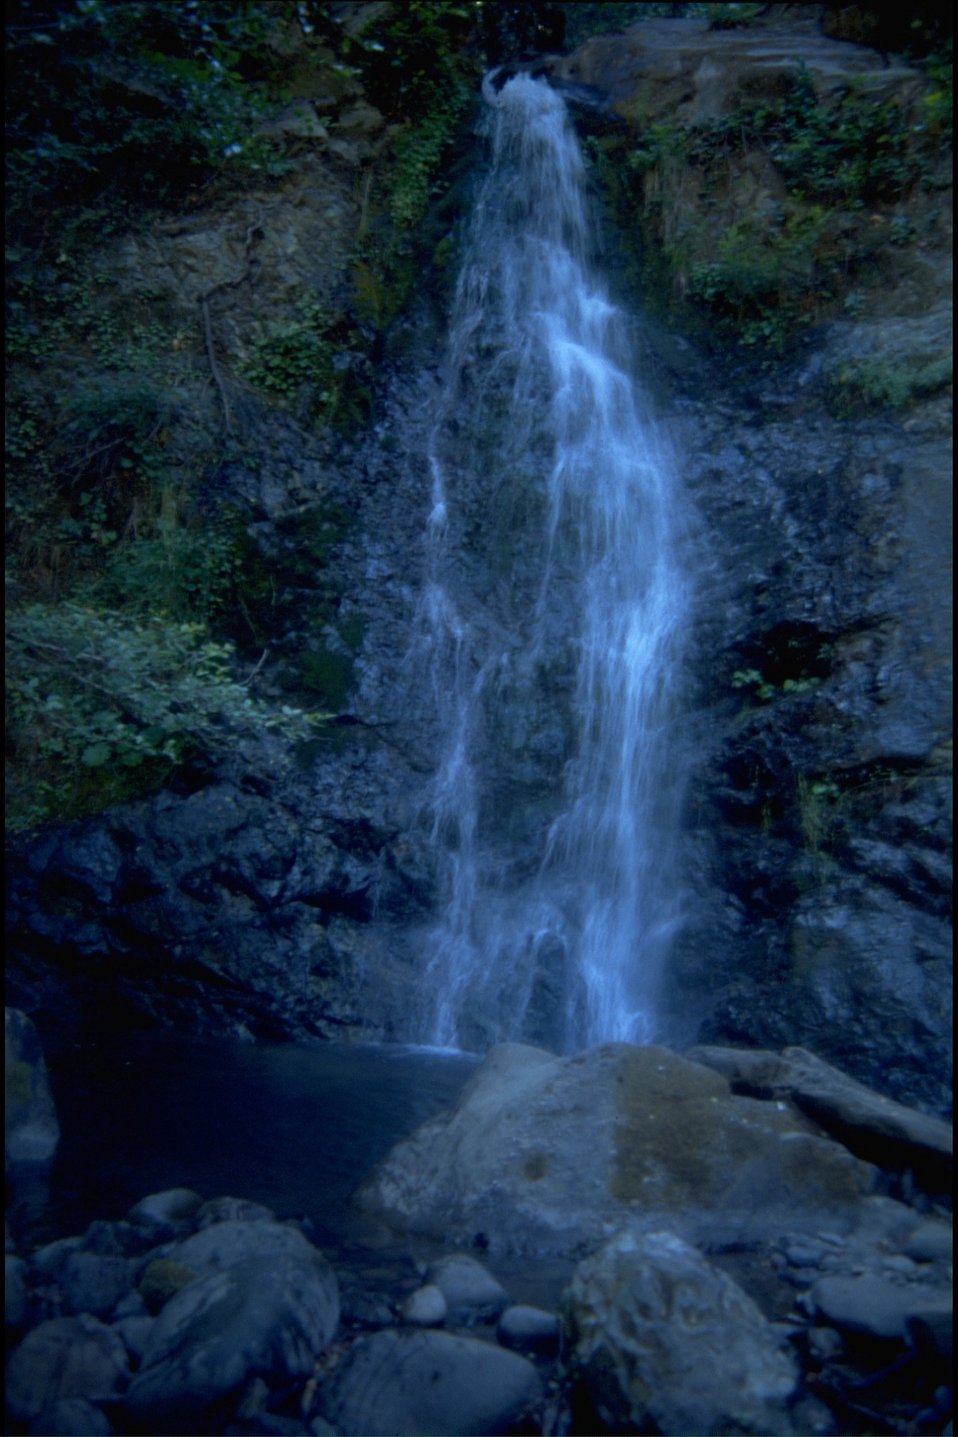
Rogue River Tate Creek Falls, wild section.